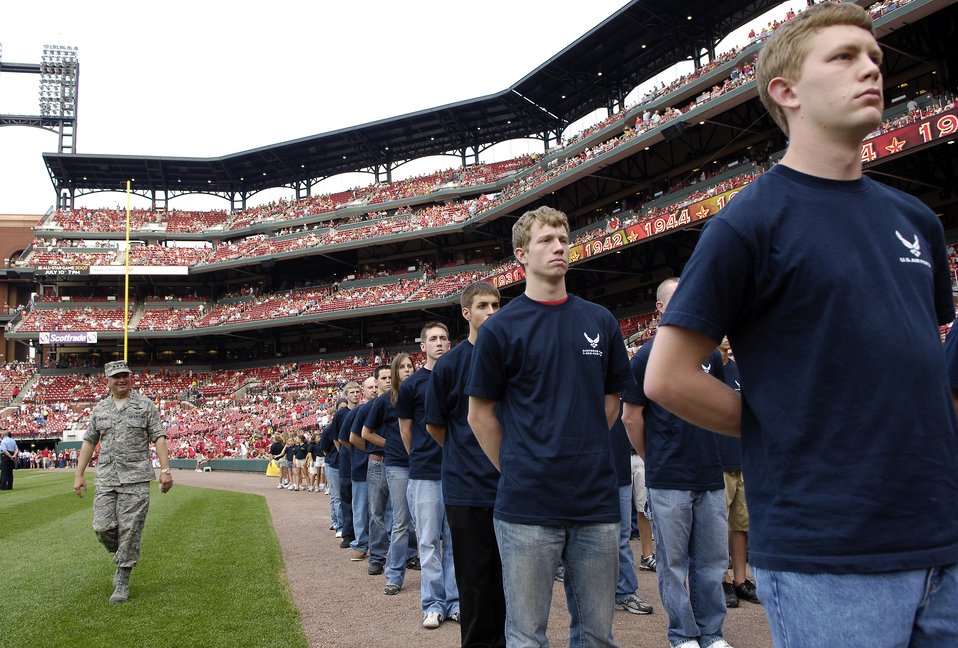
Air Force week in St. Louis

Gen. Duncan J. McNabb, Air Mobility Command commander at nearby Scott Air Force Base, Ill,